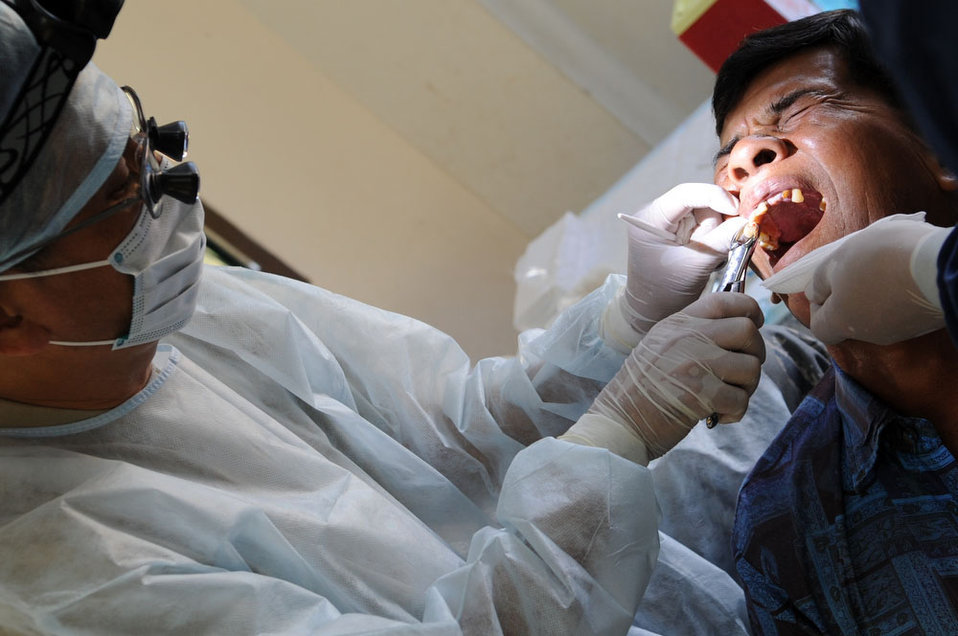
Airmen rewarded in Thailand exercise

A local man has a tooth extracted by Maj. (Dr.) Kurt Nishiguchi March 4, 2010, at the Ban Nong Sroung School in Thailand. Doctor Nishiguchi is a reservist from Joint Base Pearl Harbor-Hickam, Hawaii.